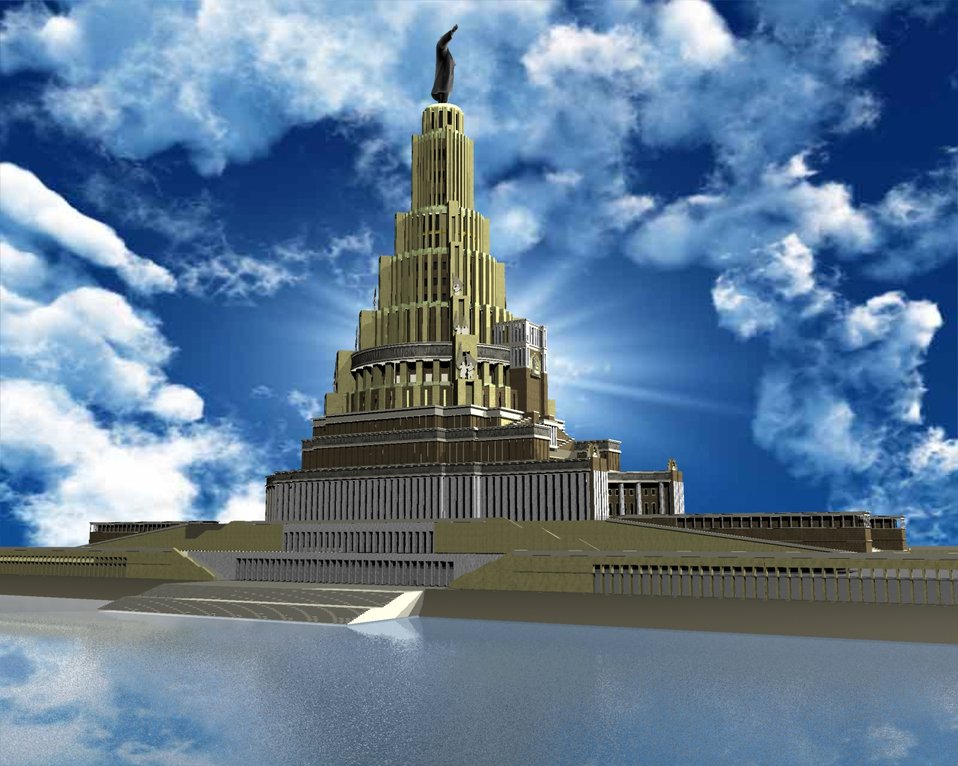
Русский: Дворец советов (Дворец Советов СССР). Выполнен в 3D Max по проекту 30-х годов Palace of the Soviets, (done in 3D Max)